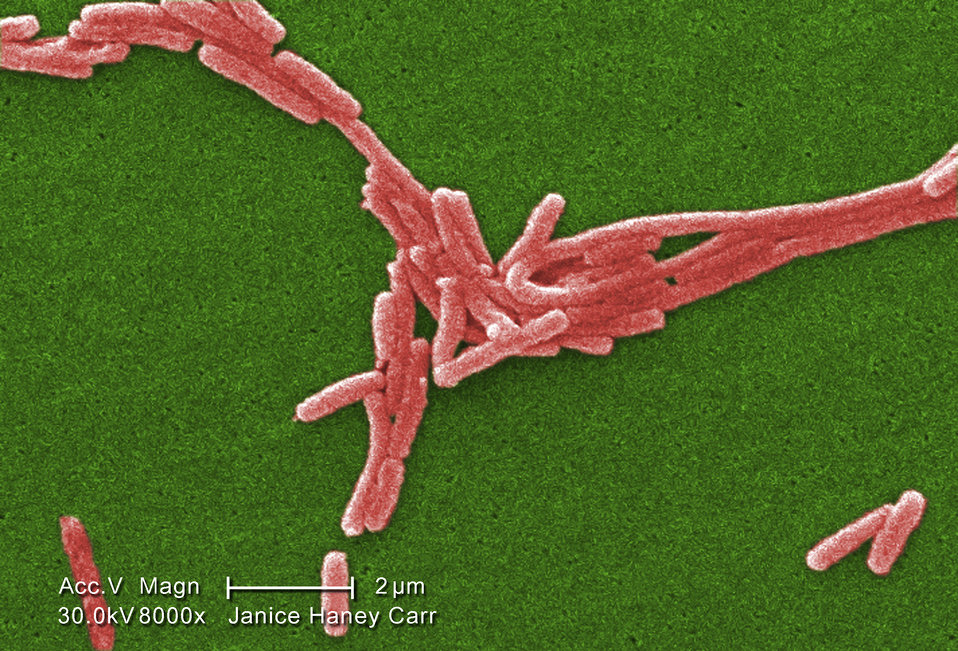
Under a high magnification of 8000X, this colorized scanning electron micrograph (SEM) depicted a grouping of Gram-negative Legionella pneumophila bacteria. Please see PHIL 11092 through 11152 for additional SEMs of these organisms, specifically PHIL 11096 for a black and white version of this image.